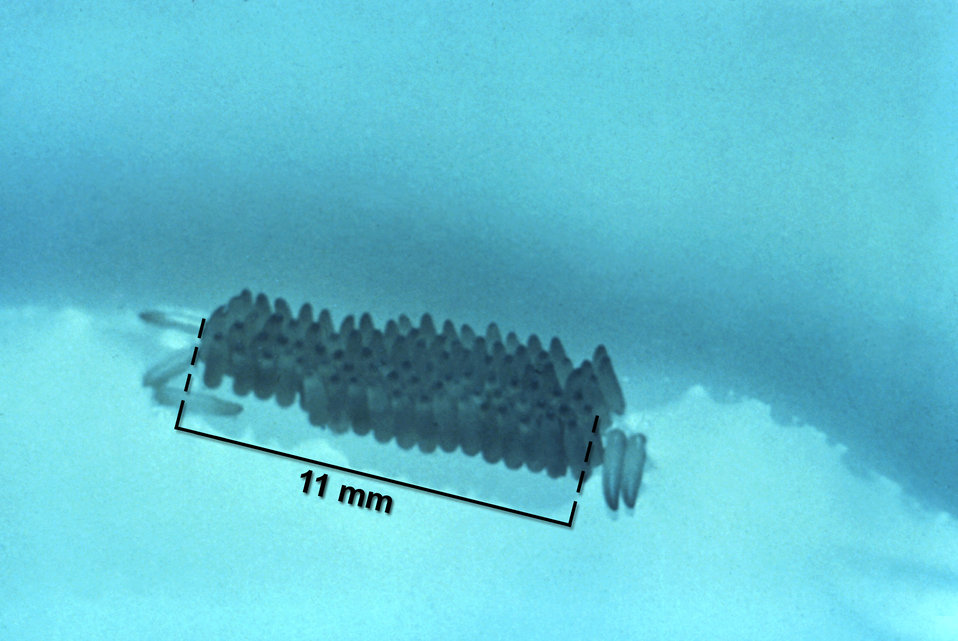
This photograph depicts a typical mosquito egg raft measuring 11 mm in length.